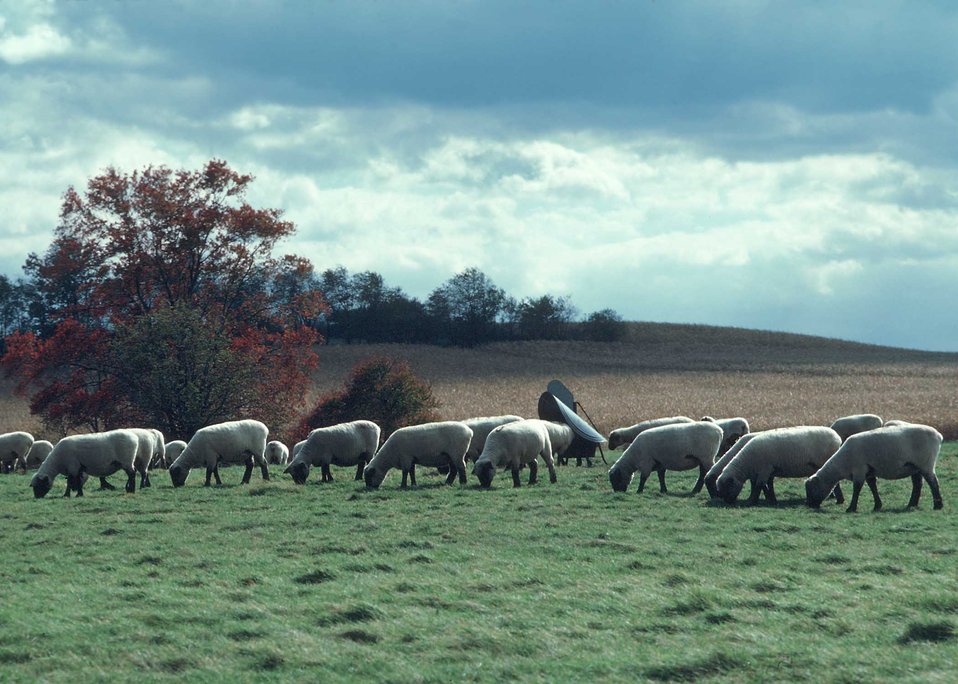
Sheep grazing in pasture in cental Maryland.